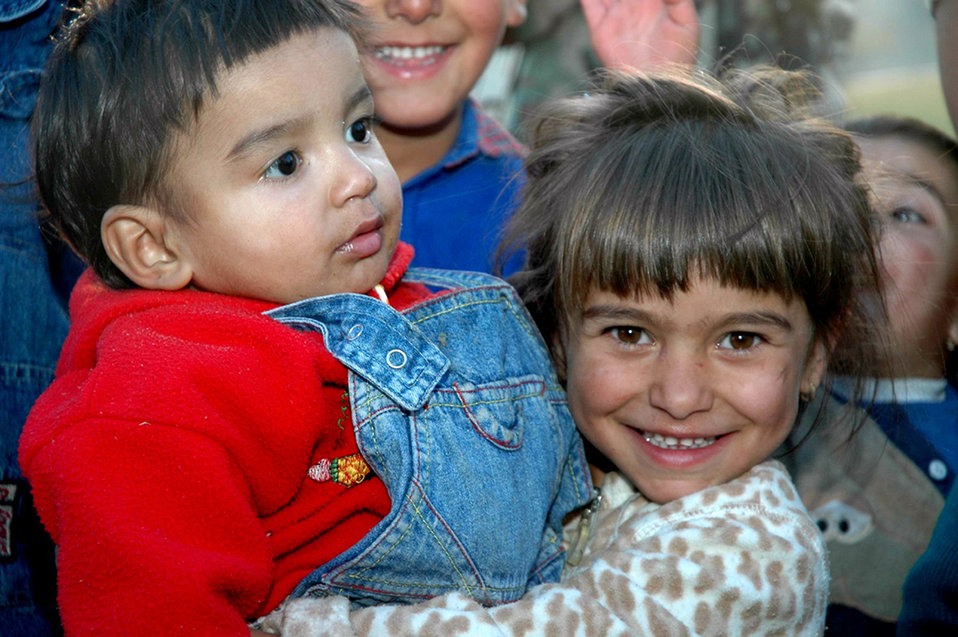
Humanitarian mission

NOVO BRDO, Kosovo (AFPN) -- Children from the Novo Brdo region gather around for gifts and candy during a U.S. Headquarters Kosovo Force humanitarian visit.